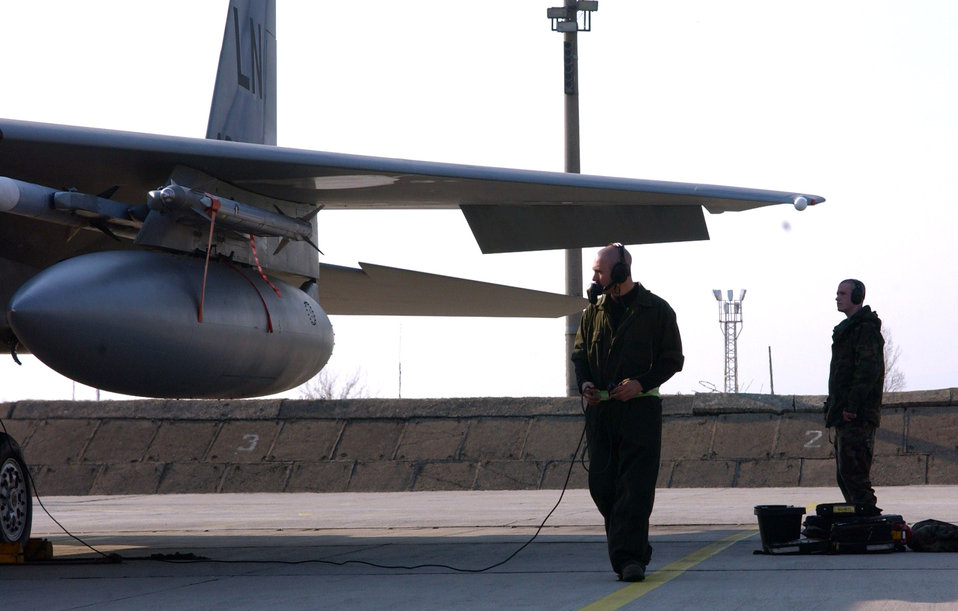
Lakenheath Airmen support NATO summit

Senior Airman John Ott performs preflight checks prior to an F-15 Eagle air policing mission in support of Operation Noble Endeavor March 31 at Graf Ignatievo Air Base, Bulgaria. F-15s deployed from Royal Air Force Lakenheath, England, are projecting airpower in support of the NATO summit in Bucharest, Romania. Airman Ott is a 493rd Expeditionary Fighter Squadron assistant crew chief.